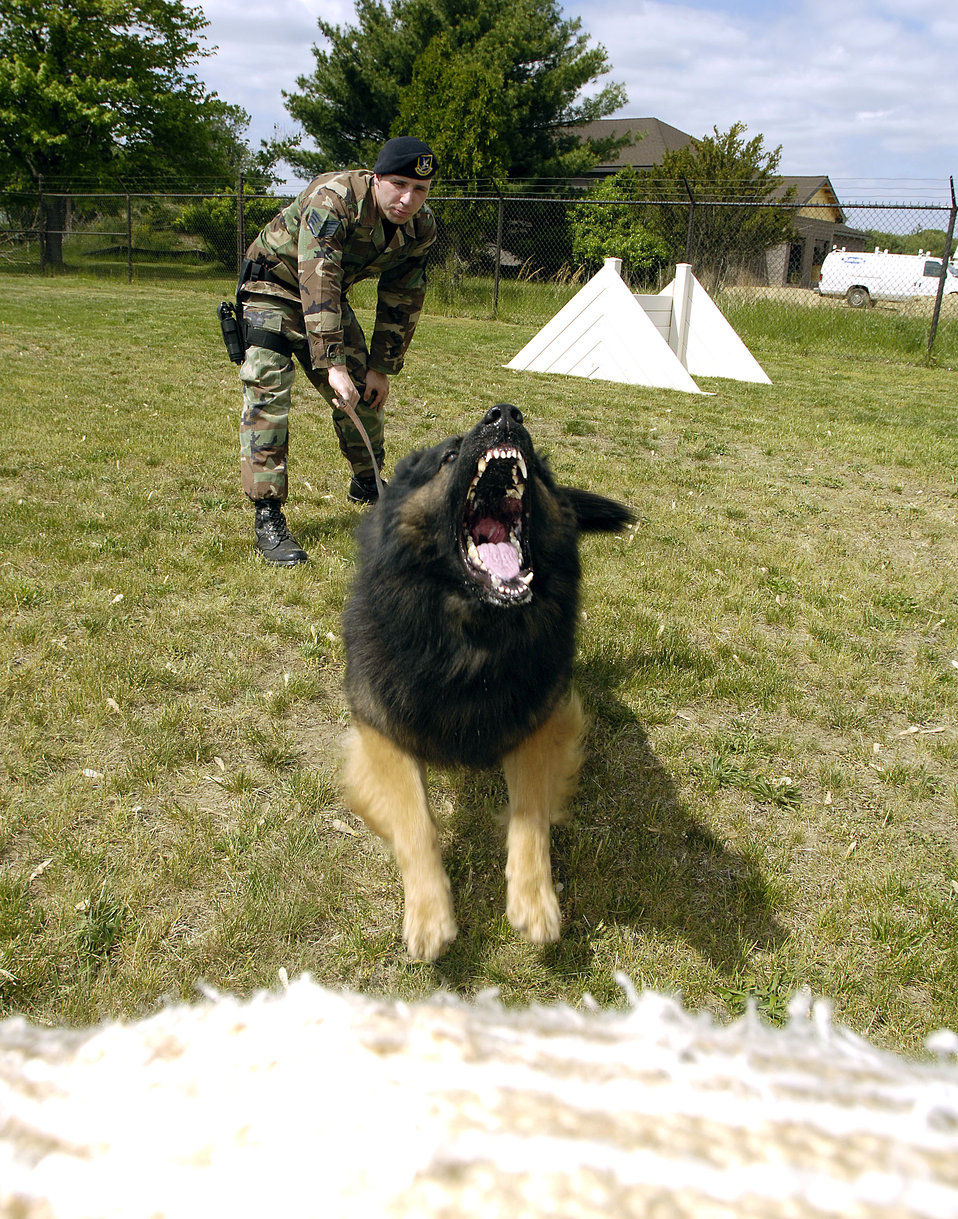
Military working dog trains hard

Staff Sgt. Stephen Upton releases Cezar to